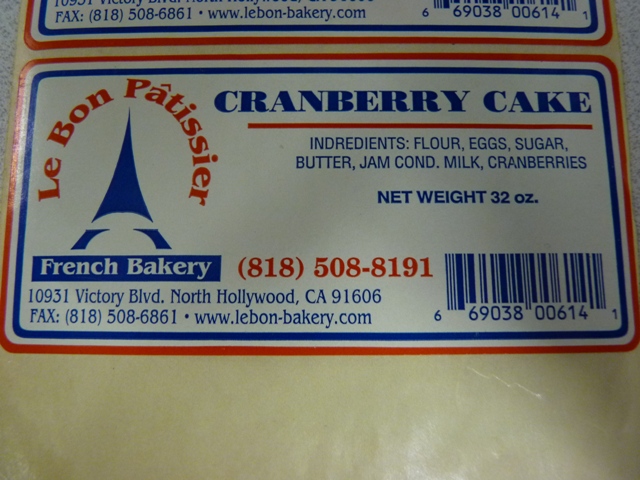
RECALLED - Pastry Products

April 5, 2011 – Product Recall – Le Bon Patissiere-2, Inc. Announces Voluntary Recall On Select Le Bon Patissiere Products That Contain Undeclared Allergens.